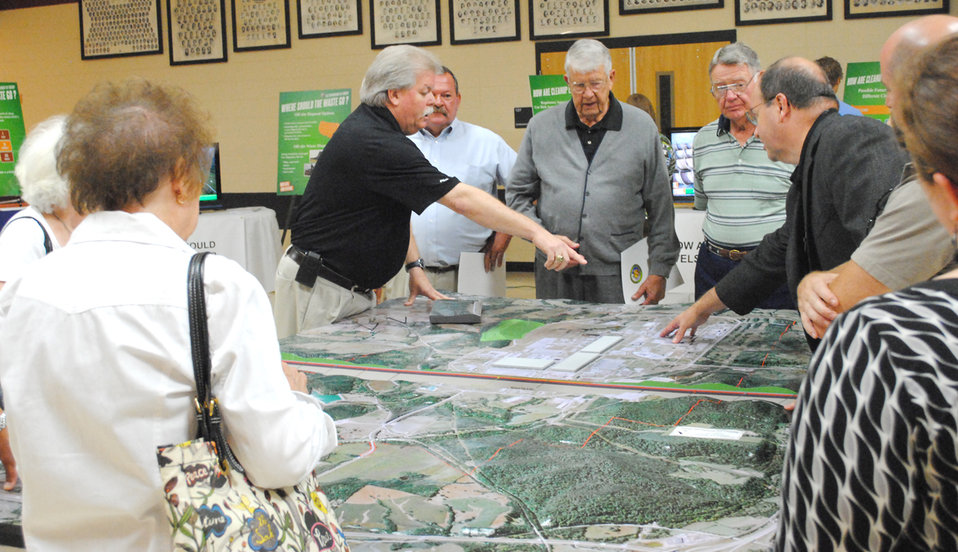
Portsmouth Public Meeting

Danny Nichols (left) and Bruce Hanni (right) of Fluor-B&W discuss features of the DOE Piketon Site with attendees at Tuesday’s public meeting hosted by the company and the Department of Energy.

More than 130 interested community members attended the public meeting to discuss current and planned activities under way at the DOE Piketon Site. The event was held at Waverly High School.